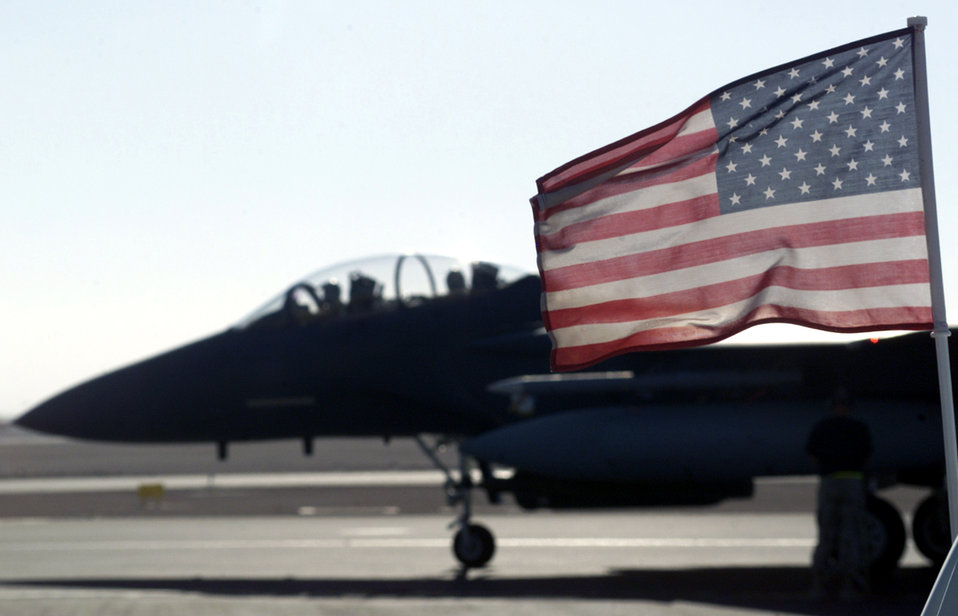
Flying colors

SOUTHWEST ASIA -- An F-15E Strike Eagle prepares to takeoff at a forward-deployed location in Southwest Asia.